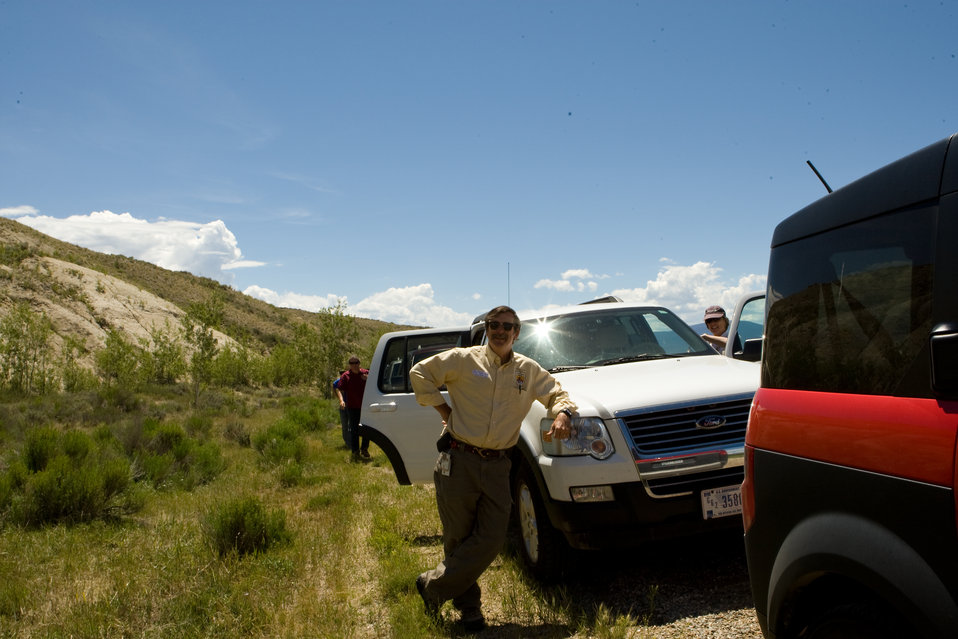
Colorado Rare Plant Conservation Initiative

The Colorado Rare Plant Conservation Initiative (RPCI) is a partnership of 23 statewide and regional agencies, private organizations, and academic institutions working to conserve 121 rare plants in Colorado. As part of these efforts the group developed the Colorado Rare Plant Conservation Strategy, developed Best Management Practices to reduce energy development impacts, addressed climate change, and developed focused strategies for the conservation of individual species at eight priority landscapes. The group has also worked to coordinate volunteer efforts for plant conservation across the state.